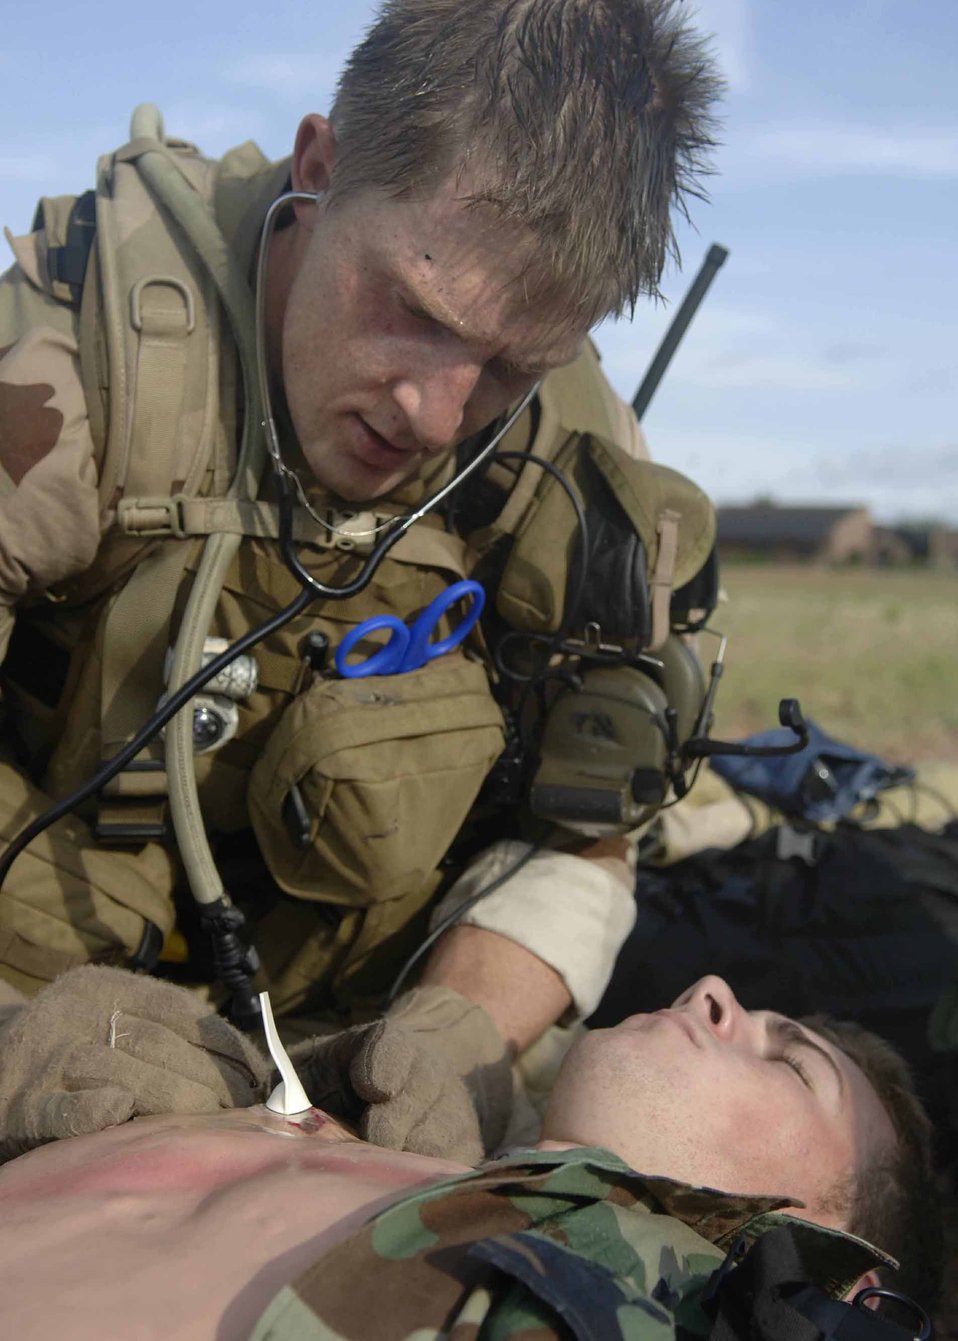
Angel Thunder

Senior Airman Troy Thompson checks the vital signs of a simulated wounded patient as part of a mass casualty scenario during exercise Angel Thunder July 27. The mass casualty scenario involved two CH-47 Chinook helicopters crashing. Once on the ground, pararescuemen triaged survivors and relocated them to a casualty collection point. They were then flown to Davis-Monthan Air Force Base to a simulated level 2/3 medical facility. This part of exercise Angel Thunder involved the 48th, 58th, 66th, 79th and 305th Rescue Squadrons as well as air support from the 358th Fighter Squadron.